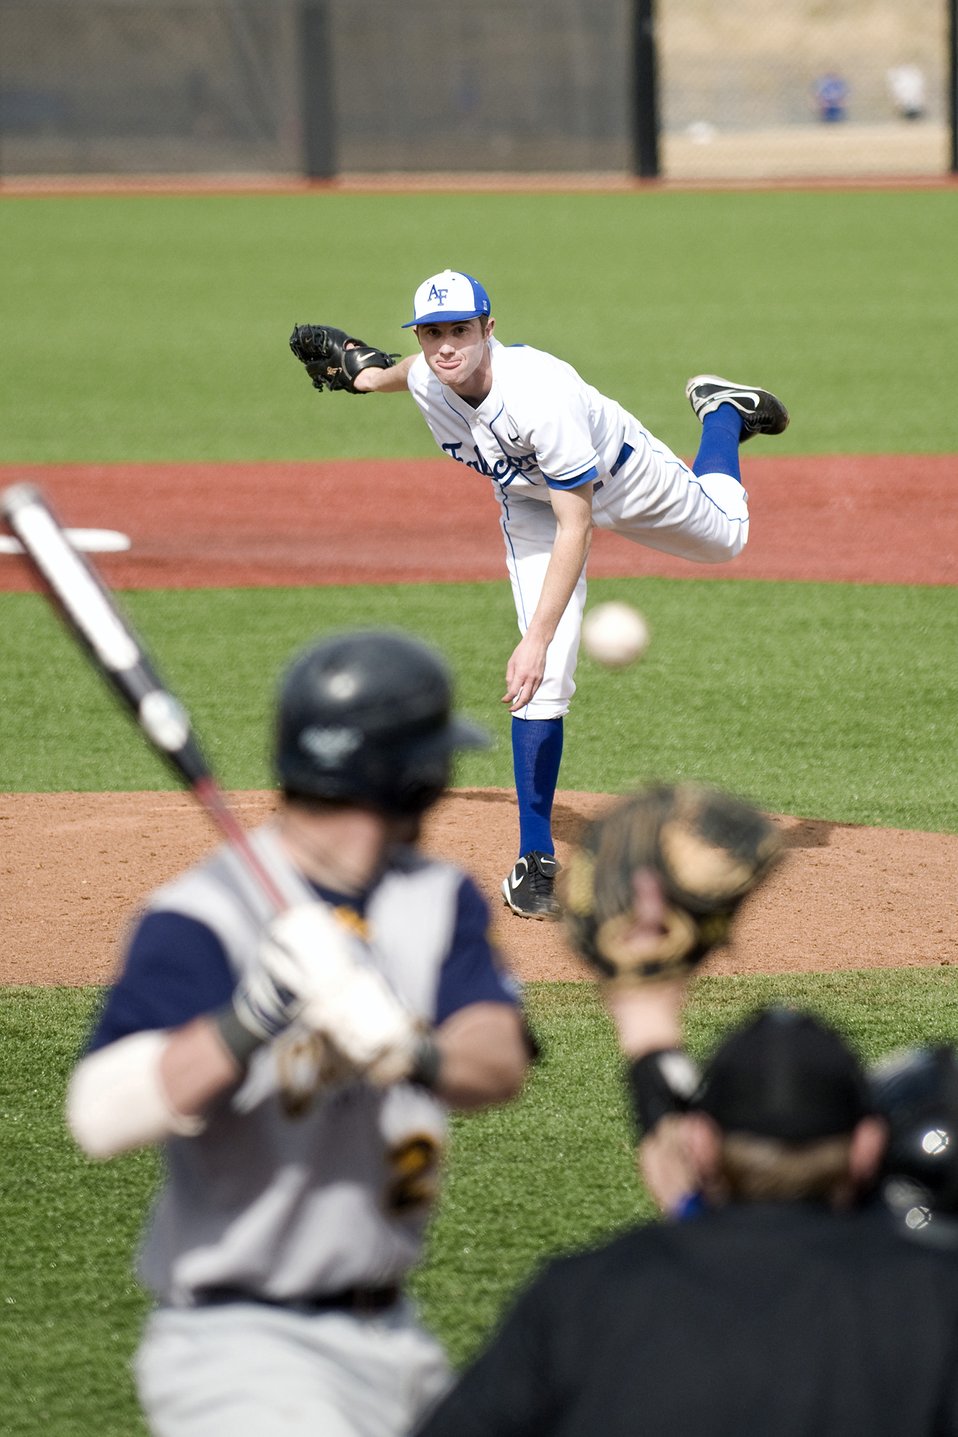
Falcons defeat the Cougars

Air Force sophomore pitcher Andrew Loyd delivers a pitch during the Falcons March 30, 2010 contest against Colorado Christian University held at the U.S. Air Force Academy's Falcon Field in Colorado The Falcons defeated the Cougars 25-7.